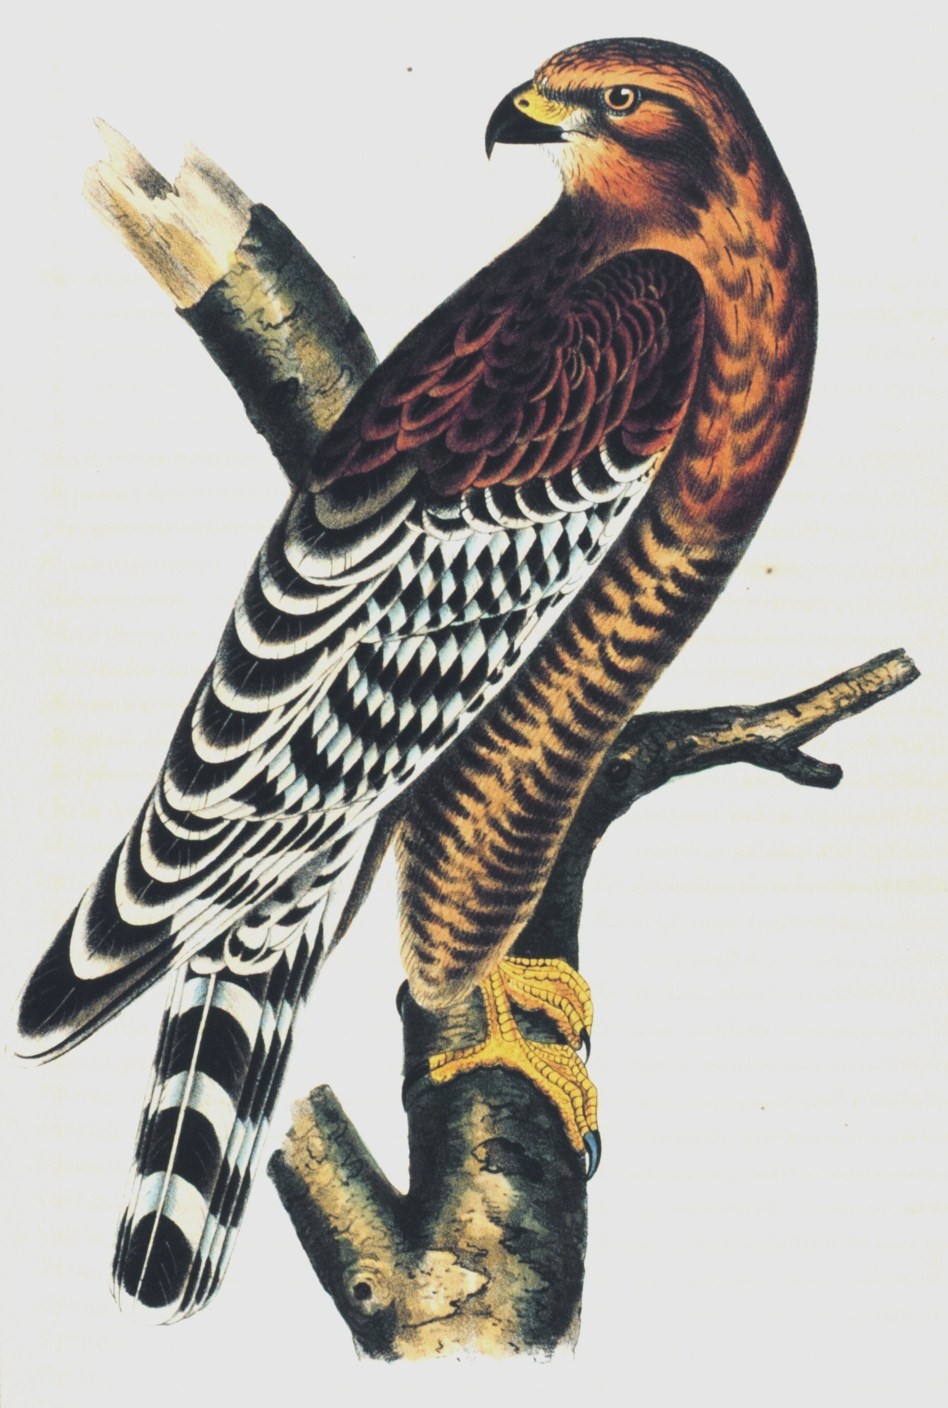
Hypotriorchis femoralis. This image was included in: Reports of Explorations and Surveys .... Volume X. 1859. Plate XVIII. P. 80 of U. S. Pacific Railroad Explorations and Surveys between San Francisco and Yuma, Arizona. Call Number F593 .U58 1855 .